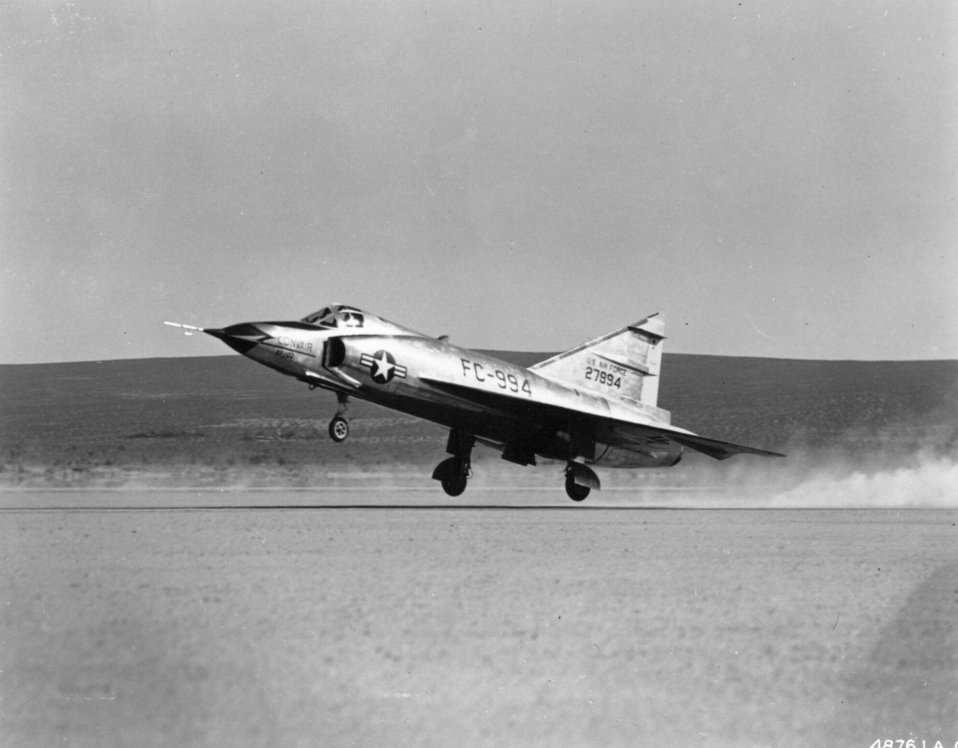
F-102 Delta Dagger

1950's -- The primary mission of the F-102